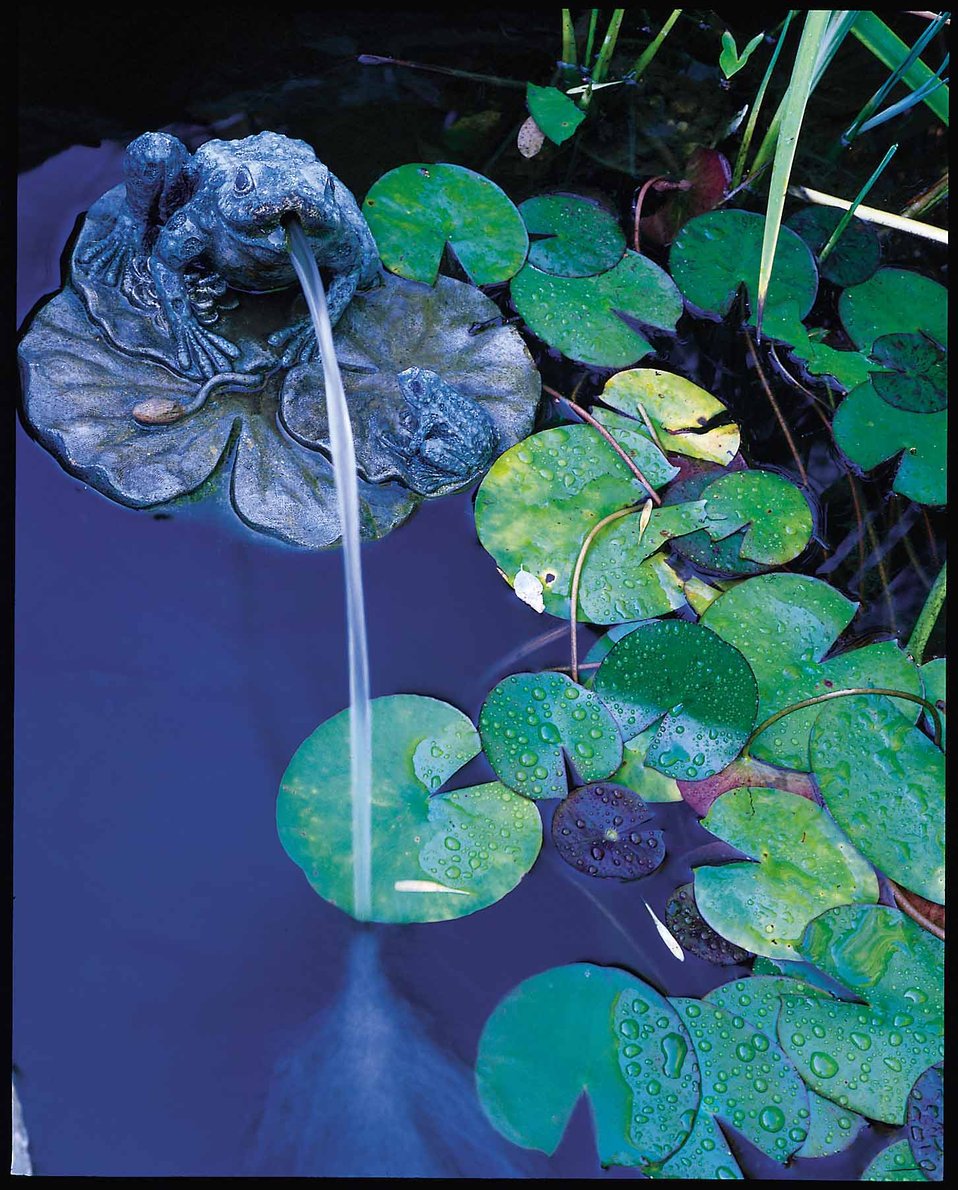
Backyard pond.